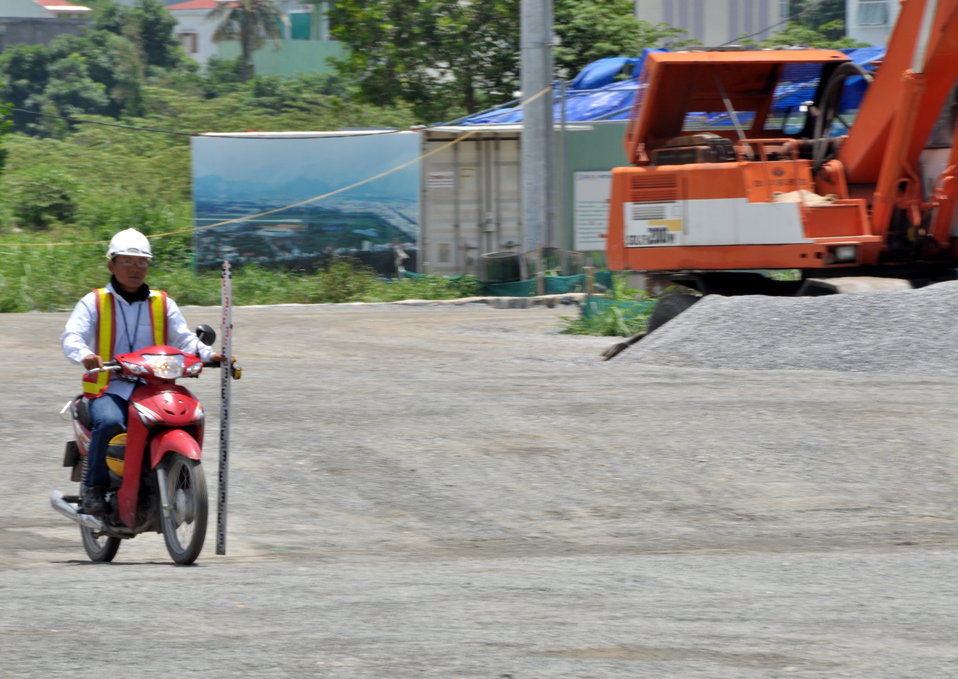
USAID Dioxin Contamination Project Progress

Progress at the Environmental Remediation of Dioxin Contamination Project at Danang Airport

July 16, 2013